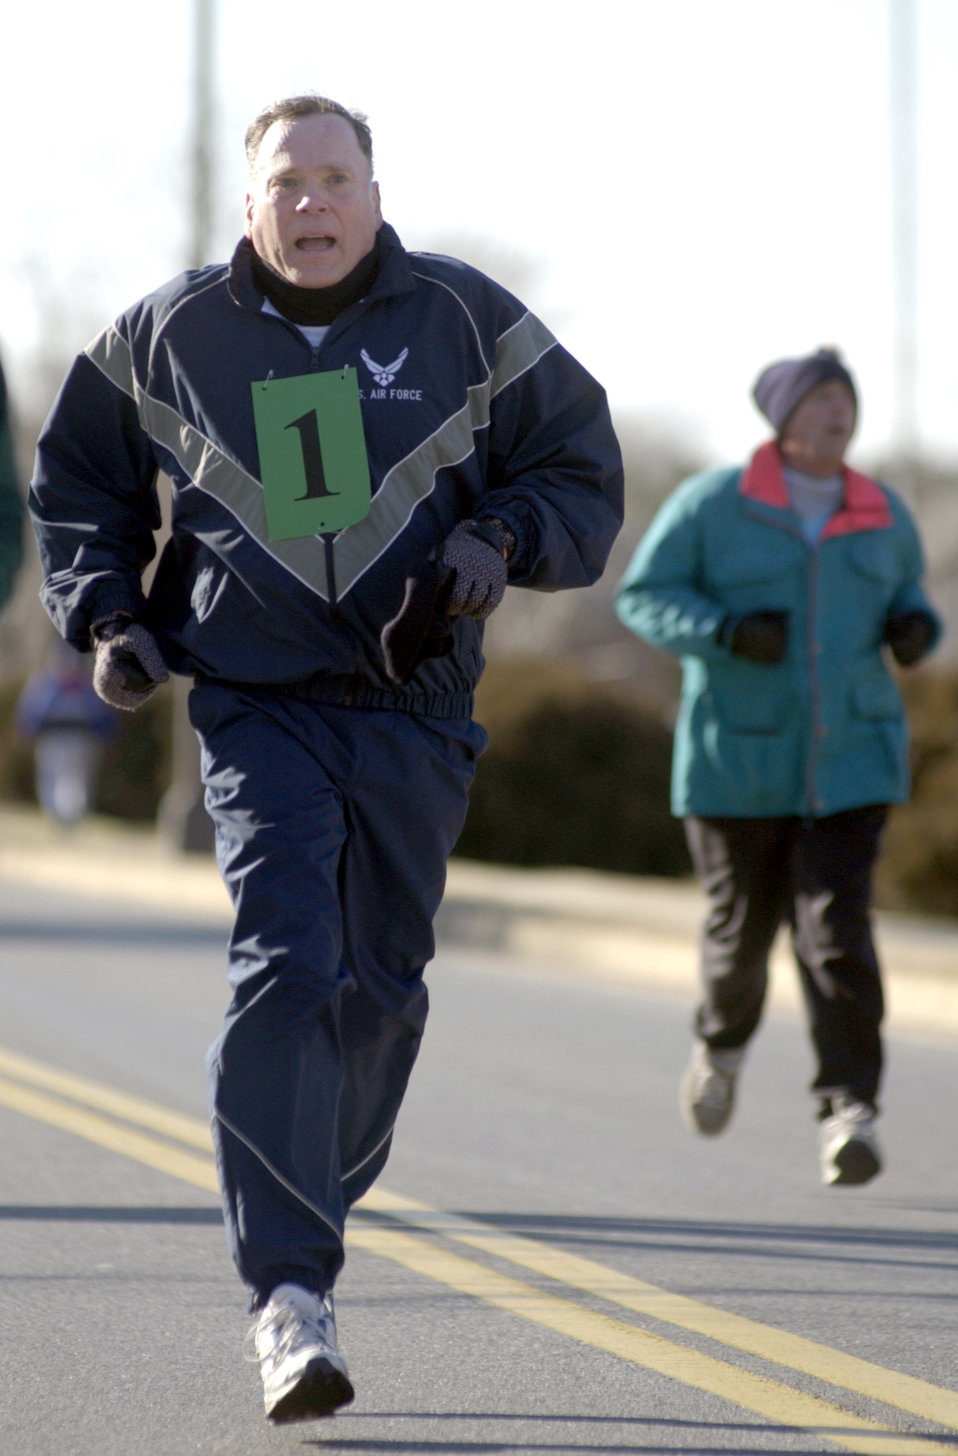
General fitness

BOLLING AIR FORCE BASE, D.C. (AFPN) -- Air Force Chief of Staff Gen. John P. Jumper finishes the 1.5-mile run for his fitness evaluation Jan. 7. Nearly 60 general officers from throughout the National Capitol Region braved bitter cold weather to join General Jumper as he led the way in officially launching the new Air Force fitness standard.